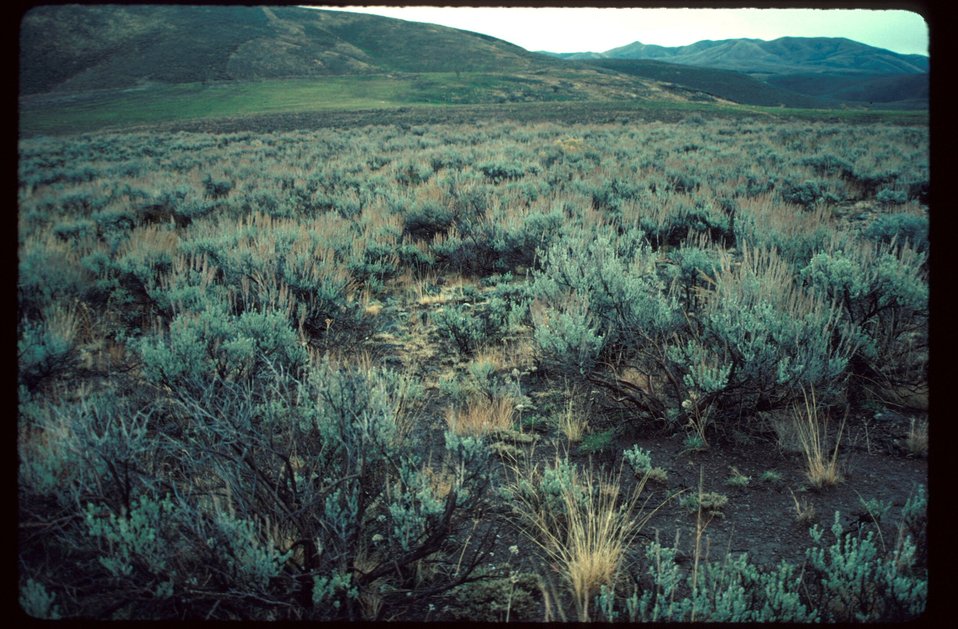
Range Restoration Project